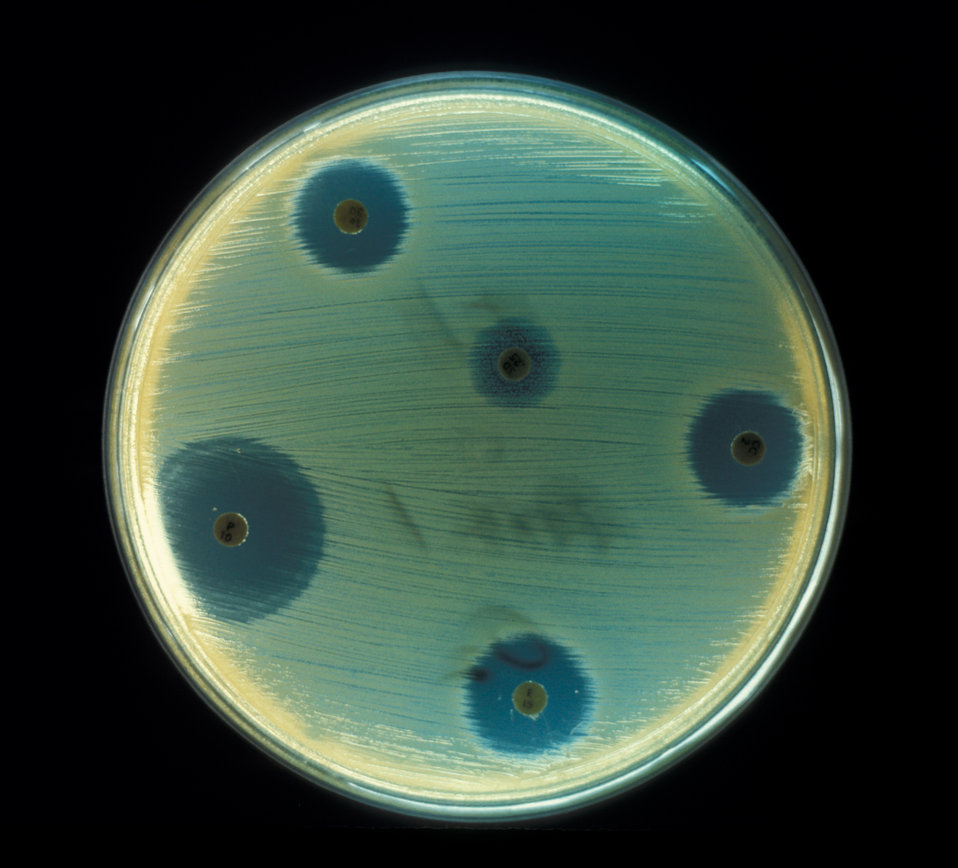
Aerobic bacteria, Staphylococcus aureus, cultured on an agar plate for drug sensitivity test in an anaerobic environment.